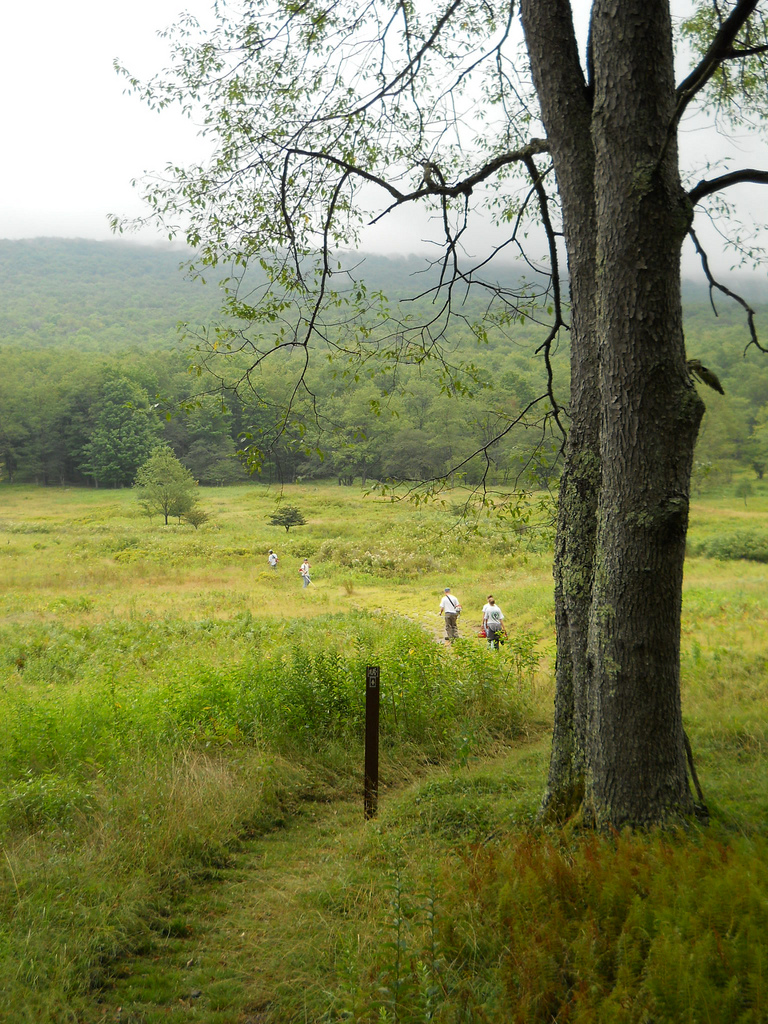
Canaan Valley Trail

A Youth Conservation Corps team walks to trail maintenance work site.